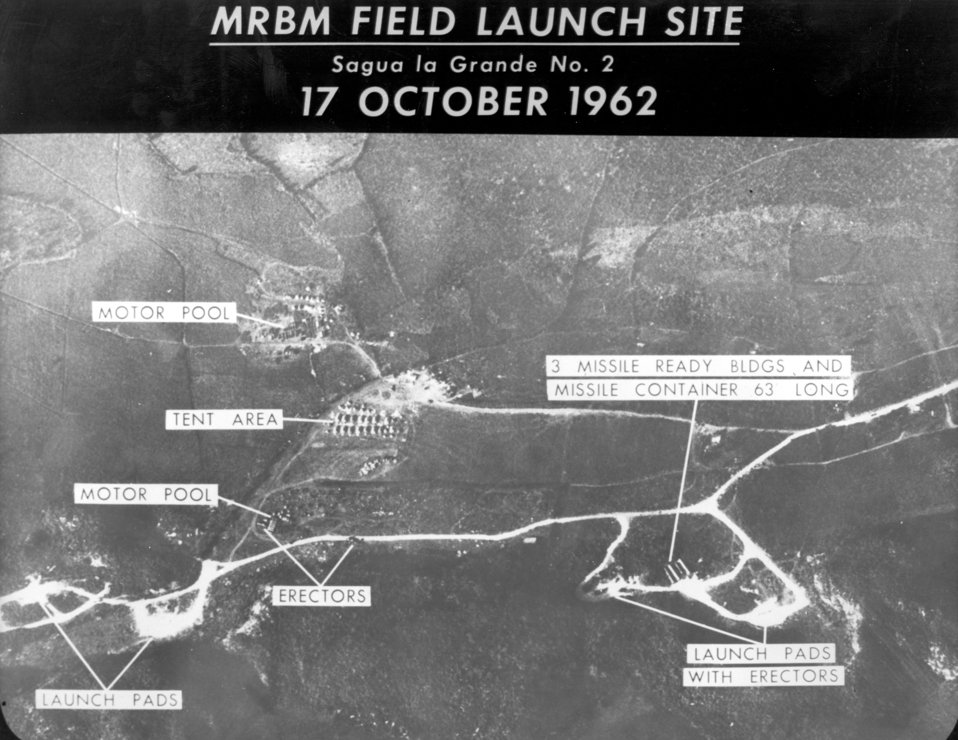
Cuban Missile Crisis-MRBM Field Launch Site

1960's -- Cuba - An aerial view showing the medium range ballistic missile field launch site number two at Sagua la Grande. October 17, 1962